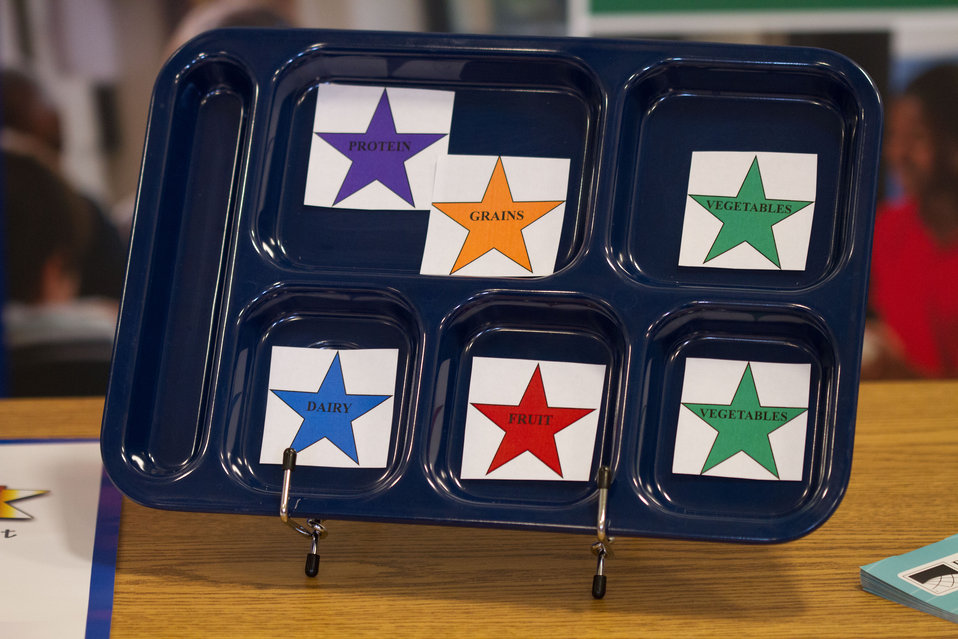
Labled cafeteria trays at Yorkshire Elementary School in Manassas, VA., encourage healthy choices is displayed while more than 50 students participate in a taste testing of the new school lunch menu created to meet the new standards. Students tested a sample menu of black-bean filled pizza, pineapple spear, plantain, sunny broccoli and cauliflower toss, and an apple and celery cup with sunbutter dip (a peanut butter substitution), on Wednesday, September 5, 2012.